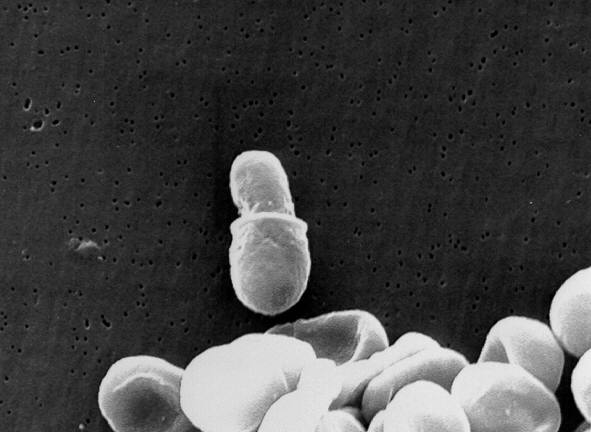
Scanning electron micrograph (SEM) of Malassezia specie fungus.